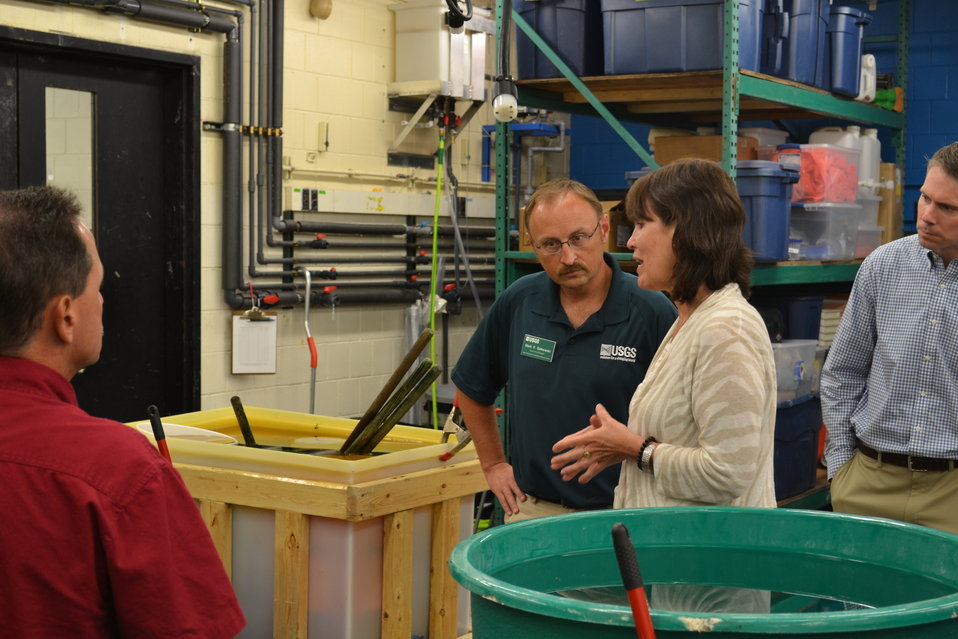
Discussion with USGS staff

Rep. Betty McCollum (D-Minn.) chats with Mark Gaikowski, a research physiologist with the U.S. Geological Survey (USGS).